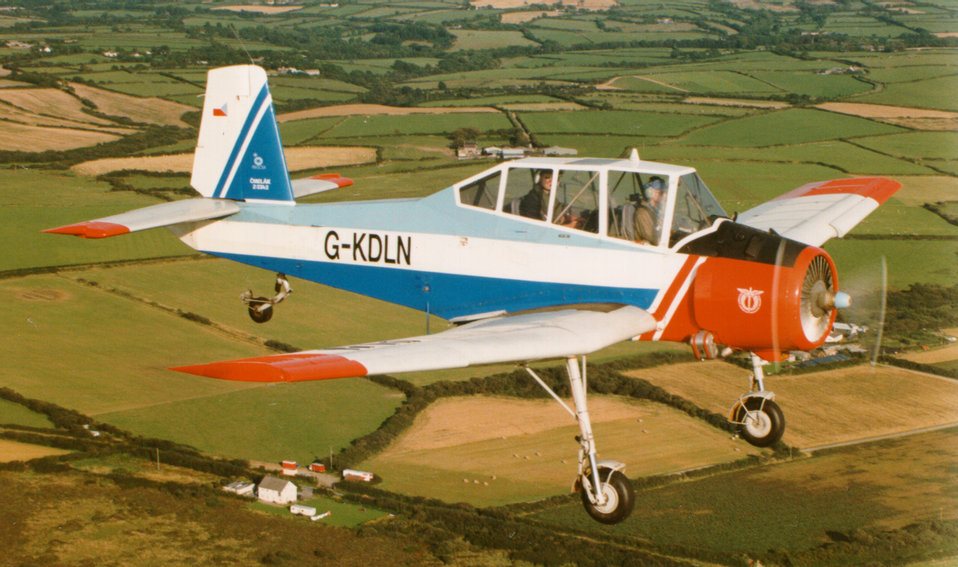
John Richards Private Collection No restriction on use.